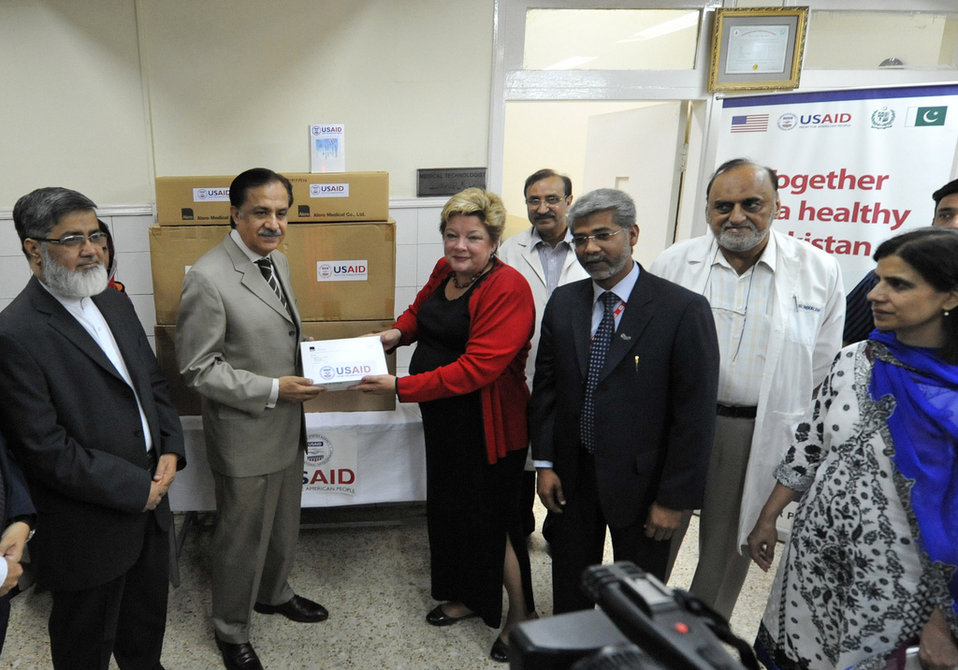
U.S. strengthens Pakistan’s ability to deliver quality health care

The U.S. Government has donated a two-year supply of blood safety kits to the Government of Pakistan to support Pakistan’s National Blood Transfusion Program. The 115,000 kits were presented by Ms. Karen Freeman, Acting Country Director for the U.S. Agency for International Development (USAID) to Mr. Imtiaz Inayat Ilhahi, Secretary of Capital Administration and Development Pakistan, today at the Pakistan Institute for Medical Sciences (PIMS).